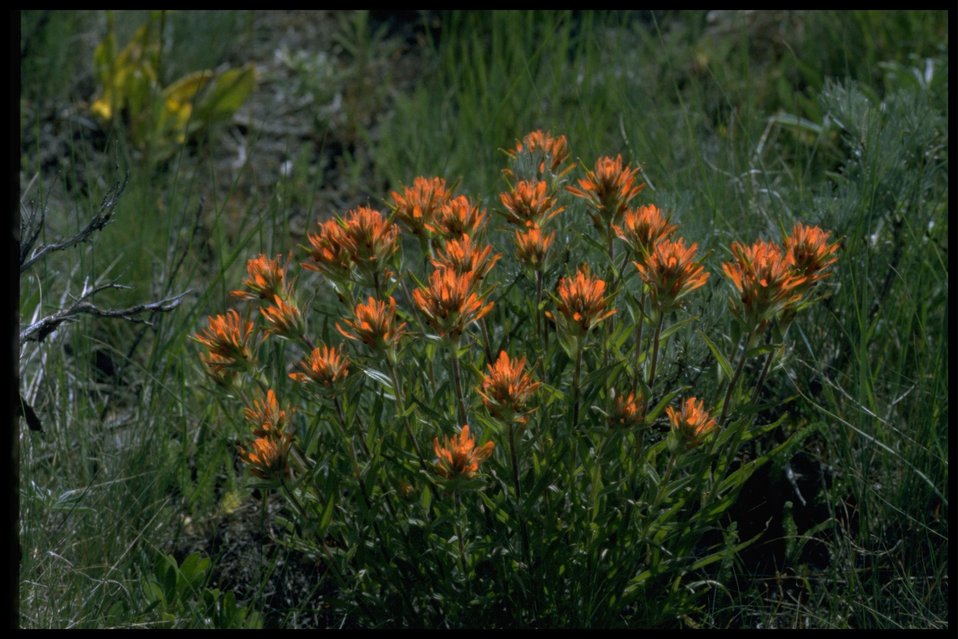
Farshot of Indian Paintbrush wildflowers.